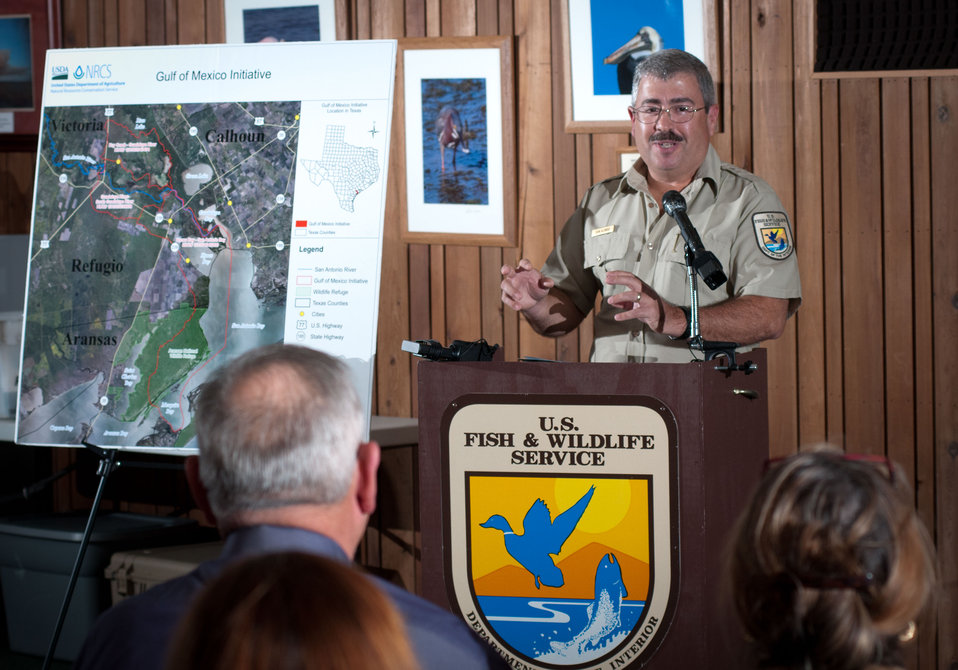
U.S. Department of the Interior, Fish and Wildlife Service Aransas National Wildlife Refuge Manager Dan Alonso gave background information about the 115,000-acre refuge that was established in 1939, during the roll out the Gulf of Mexico Initiative (GOMI) in Texas, at the refuge's visitor center in Austwell, TX, on Friday, Dec. 16, 2011. The Aransas Refuge is a 15,000-acre wildlife sanctuary established in 1939. Its fresh water comes from the San Antonio River, which flows by the historic Alamo southeasterly towards the Guadalupe River at the estuary of San Antonio Bay, the primary body of water for the refuge.